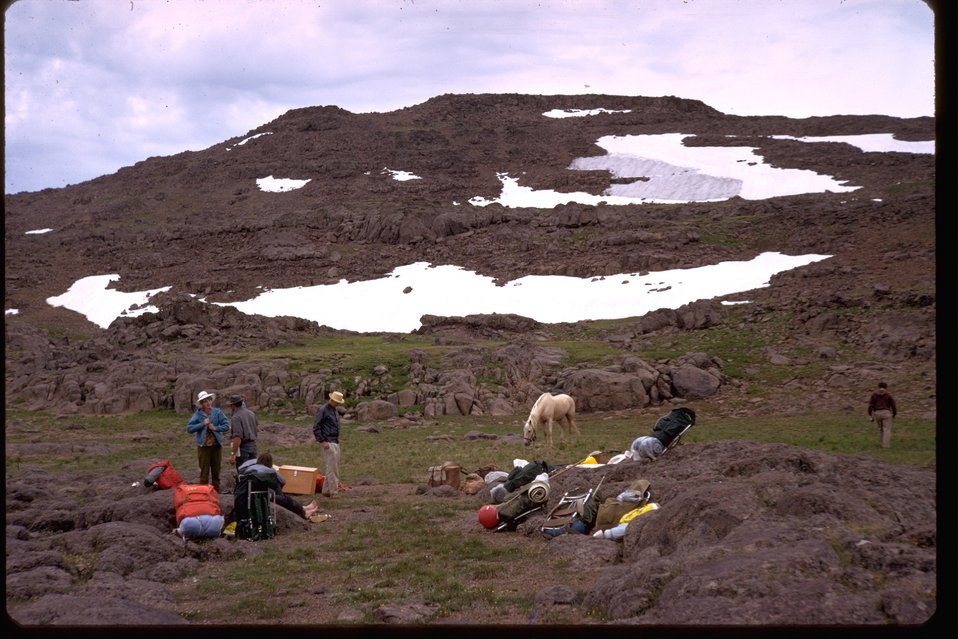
Hikers on the High Steens in the spring.